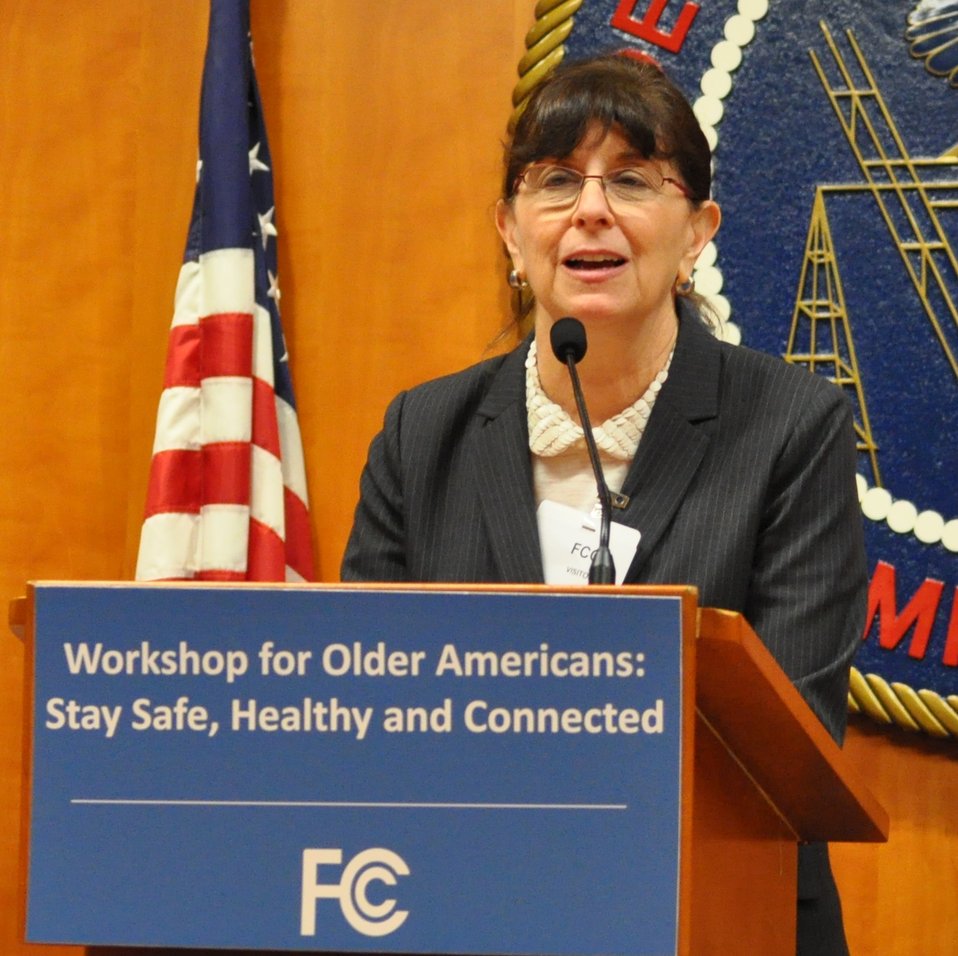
9

Dr. Karen S. Rheuban, M.D., Senior Associate Dean for CME and External Affairs, Director, Center for Telehealth, University of Virginia